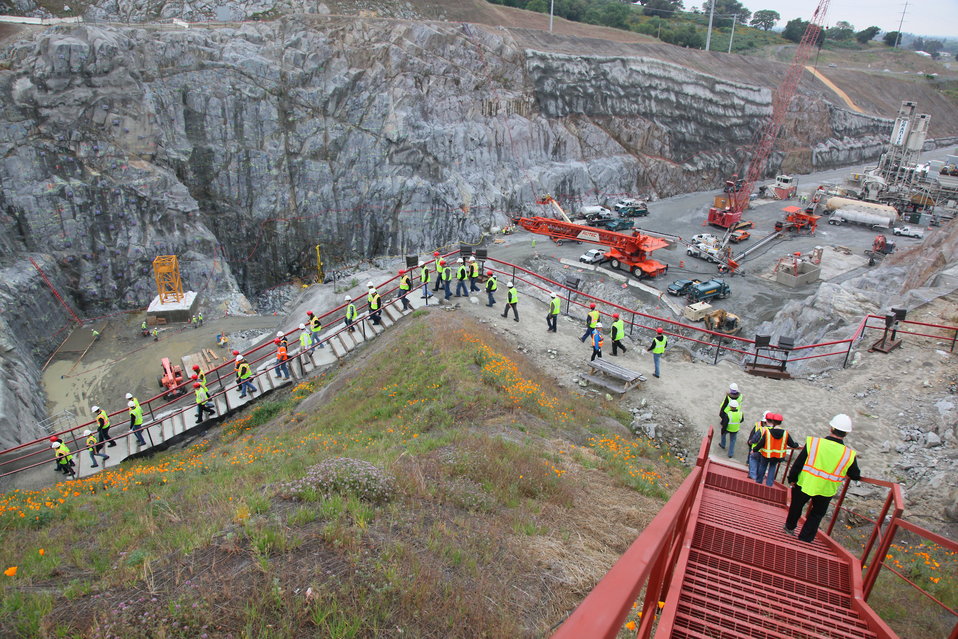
Sacramento State engineering students get a Folsom site tour

Engineering students from California State University-Sacramento took a walking tour with U.S. Army Corps of Engineers Sacramento District personnel at Folsom Lake in Folsom, Calif., April 25, 2012. Corps personnel from the Folsom Dam Joint Federal Project provided a tour of the construction site for the auxiliary spillway to the future engineers.